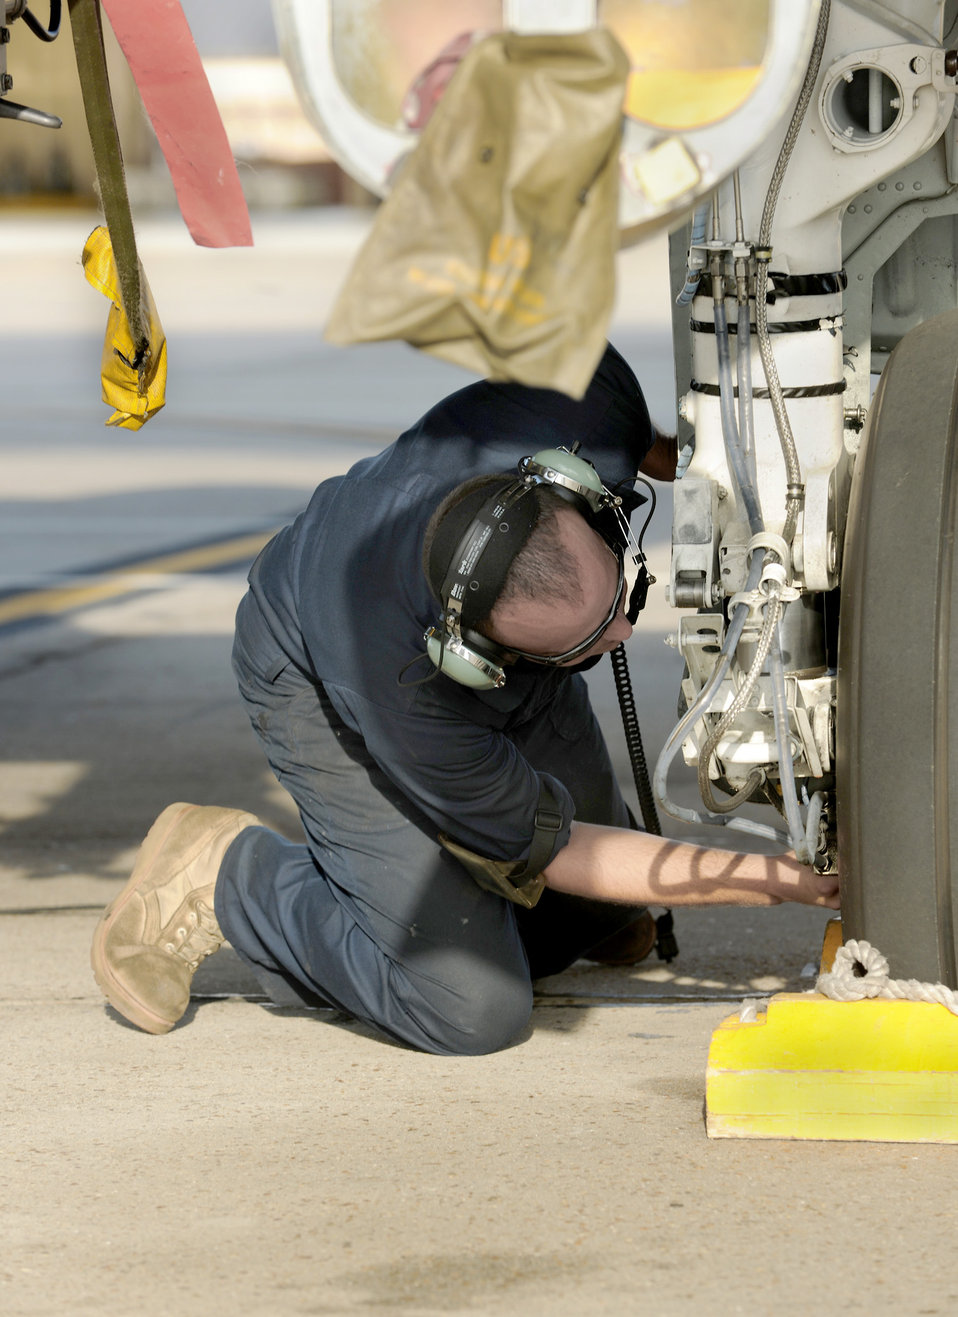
Enhanced Mojave Viper Exercise

Staff Sgt. David Clifford checks the brakes on an A-10C Thunderbolt II Aug. 13, 2010, at Moody Air Force Base, Ga., before its departure to Arizona in support of the Enhanced Mojave Viper Exercise. Sergeant Clifford is an A-10 demonstration team crew chief with Air Combat Command East Coast team.